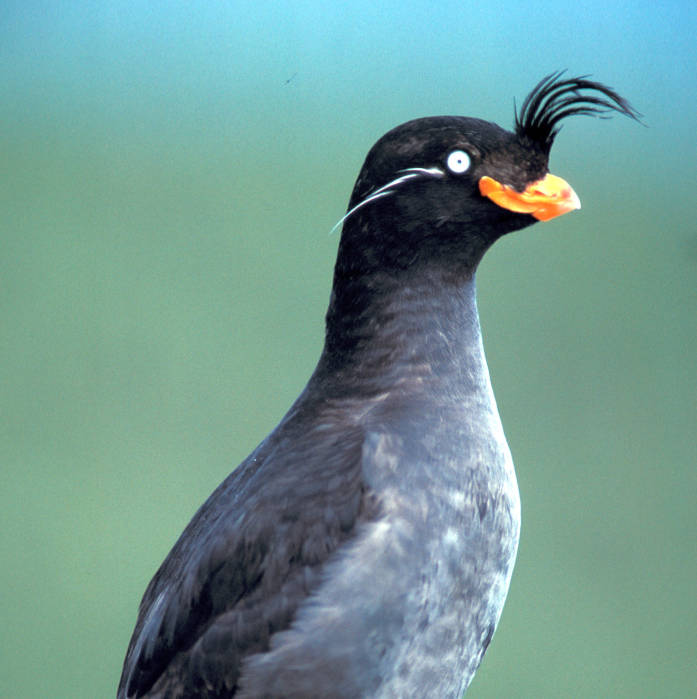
Crested Auklet, Kiska Island, Alaska